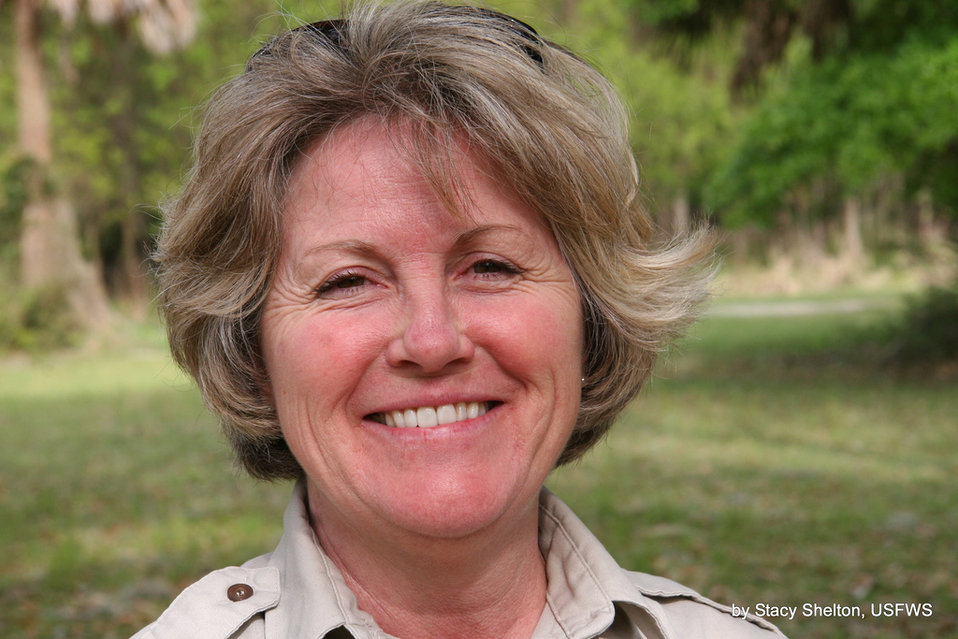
raye nilius, Project Leader south carolina low country complex, by stacy shelton

Project Leader Raye Nilius
Raye Nilius is the U.S. Fish and Wildlife Service Project Leader for the South Carolina Lowcountry Refuges Complex.